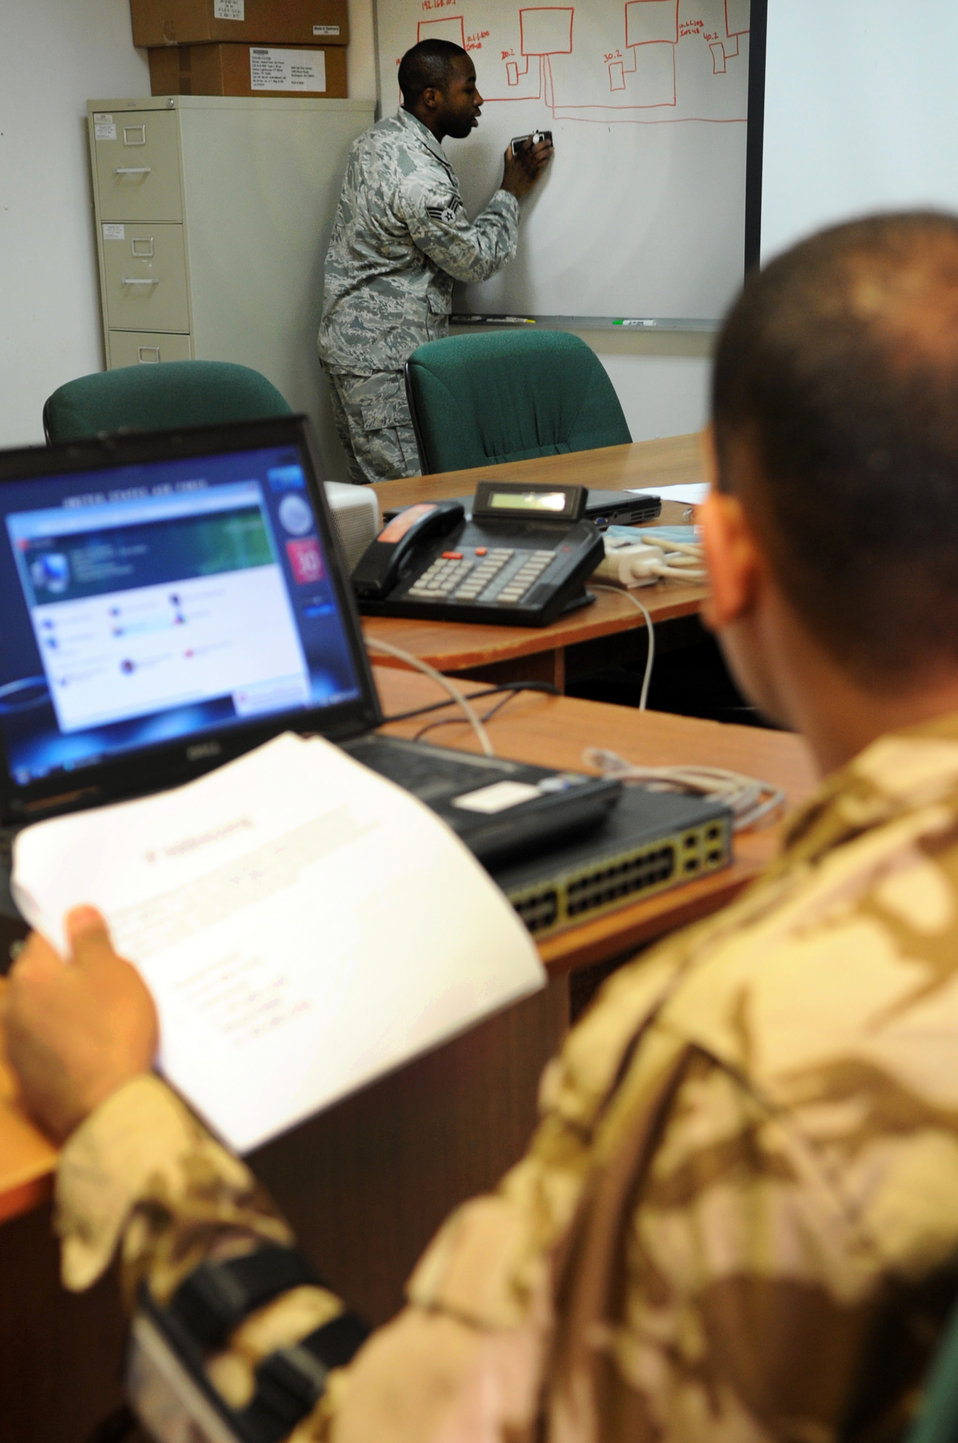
Airmen teach Iraqi counterparts networking skills

Senior Airman Andre Taylor teaches Iraqis basic configurations of communication methods Jan. 30, 2010, at Kirkuk Air Base, Iraq. Airman Taylor is a 506th Expeditionary Communications Squadron computer switching and cryptographic technician.